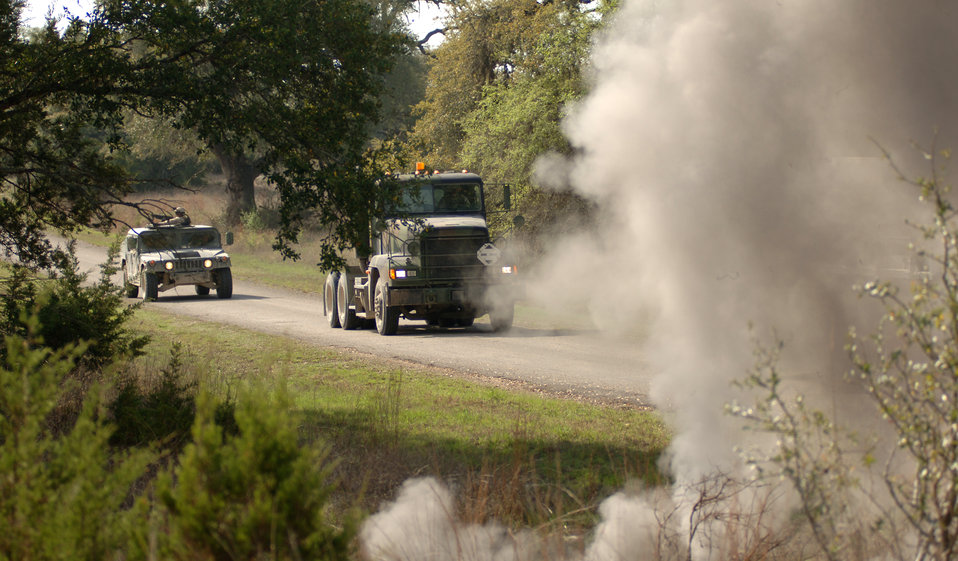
Convoy tactics

Airmen training in up-to-date convoy tactics and techniques are attacked in a simulated improvised explosive device detonation during the Basic Combat Convoy Training course at Camp Bullis, Texas, on Monday, April 3, 2006. The course is designed to keep Airmen battlefield focused and well-trained for convoy operations.